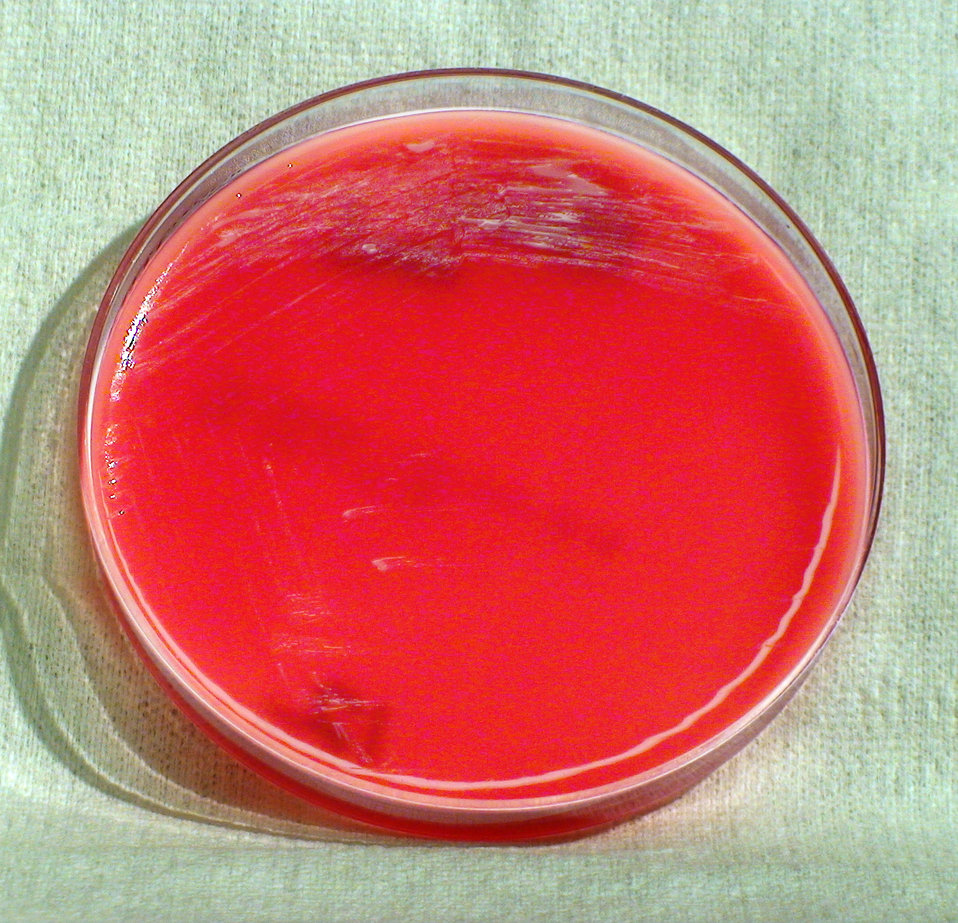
This photograph depicts the colonial morphology displayed by Gram-negative Brucella melitensis bacteria, which was grown on a medium of sheep's blood agar (SBA), for a 48 hour time period, at a temperature of 37�C. See also, PHIL 12398 for a view of this bacterial specie, colonized on modified Thayer-Martin agar, at the same temperature, but for a longer time period (72hr); PHIL 12399, for B. melitensis bacteria grown also, on SBA at the same temperature, but also, for a greater time period (72hr); PHIL 12452, for B. melitensis bacteria grown on SBA at the same temperature, but for half the time period (24hr). Brucella spp. bacteria are responsible for causing the disease known as brucellosis.